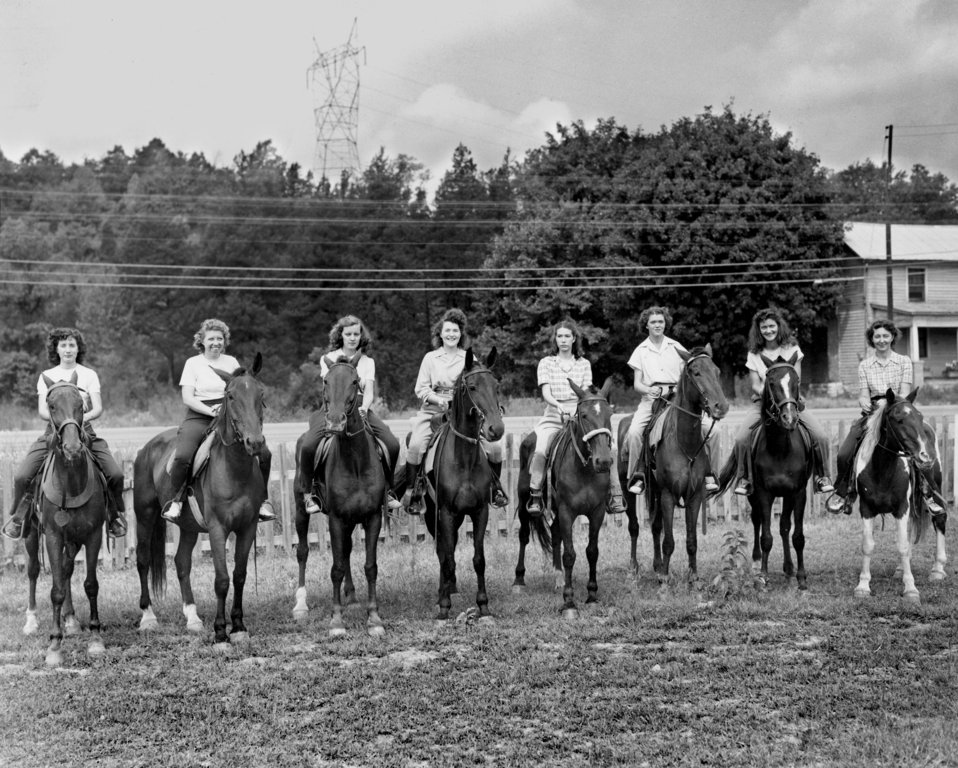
Stable Ridding Class Oak Ridge 1946

1951-10 DOE photo Ed Westcott 9-14-1946 Oak Ridge Tennessee